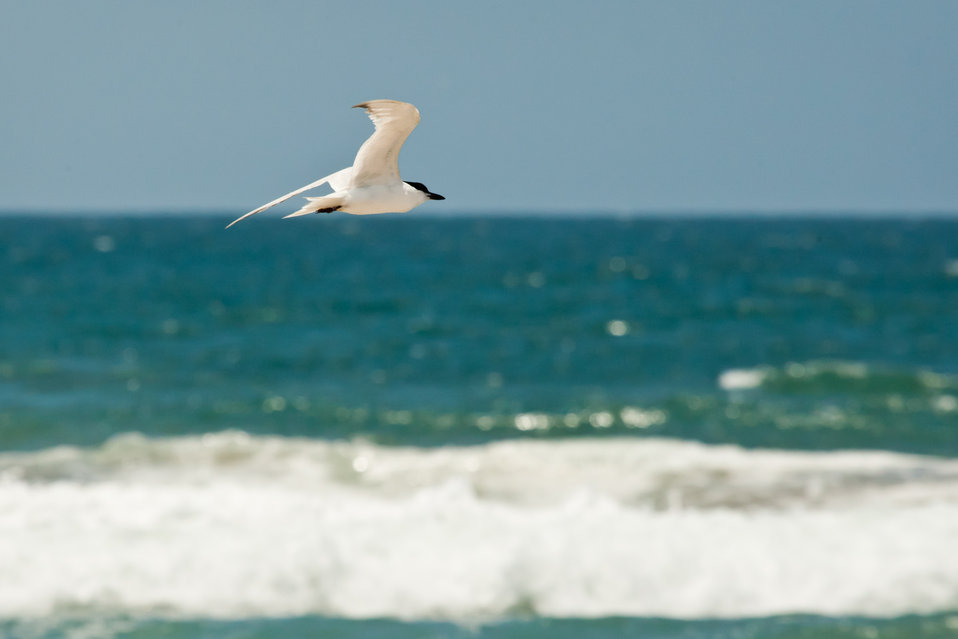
Gull-billed tern (GBT), adult

GBT have a very distinctive markings of a sleek black beak and head cap, and are hard to miss. These terns are normally rare, but flock to the San Diego Bay NWR and Tijuana Slough NWR's to breed and feed -- sometimes even feed on least tern or snowy plover chicks.